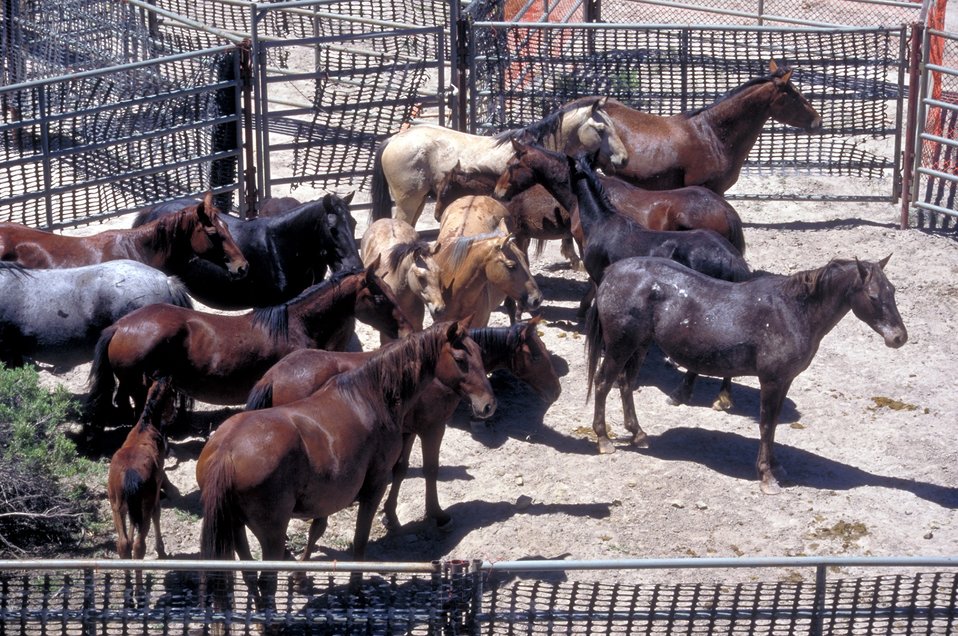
Wild horse gather near Vernal, Utah.